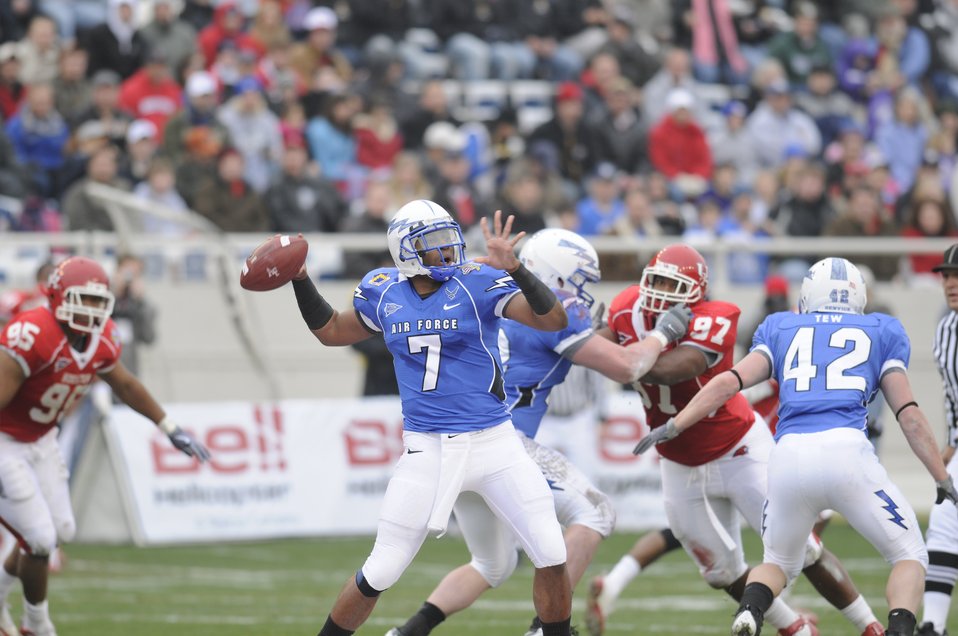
Armed Forces Bowl

Falcons quarterback Tim Jefferson gets ready for a deep pass against Houston during the Armed Forces Bowl Dec. 31, 2009, at Fort Worth, Texas. The U.S. Air Force Academy triumphed over the University of Houston Cougars, 47-20.